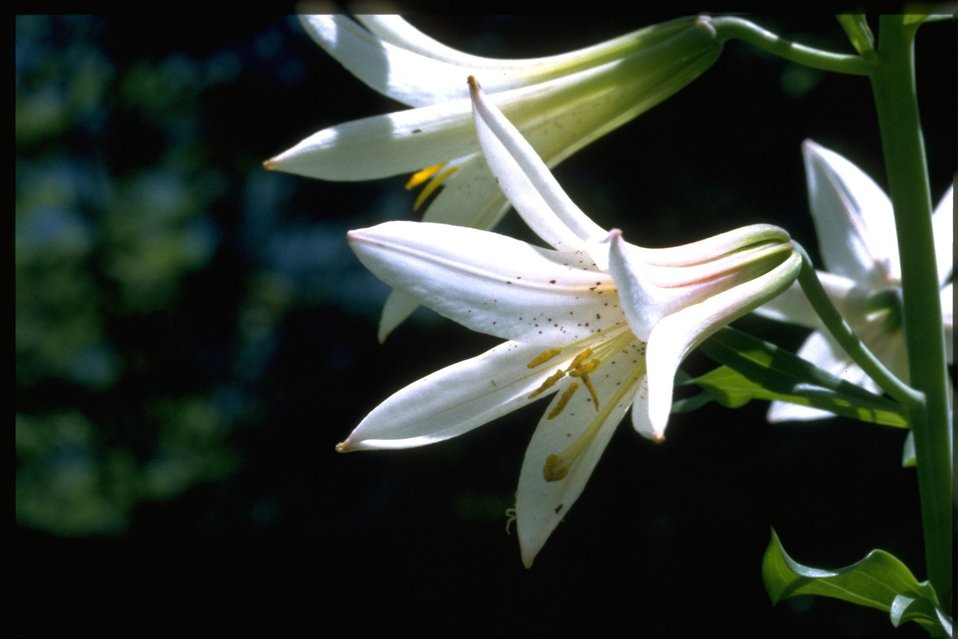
Closeup shot of Lilium washingtonianum.